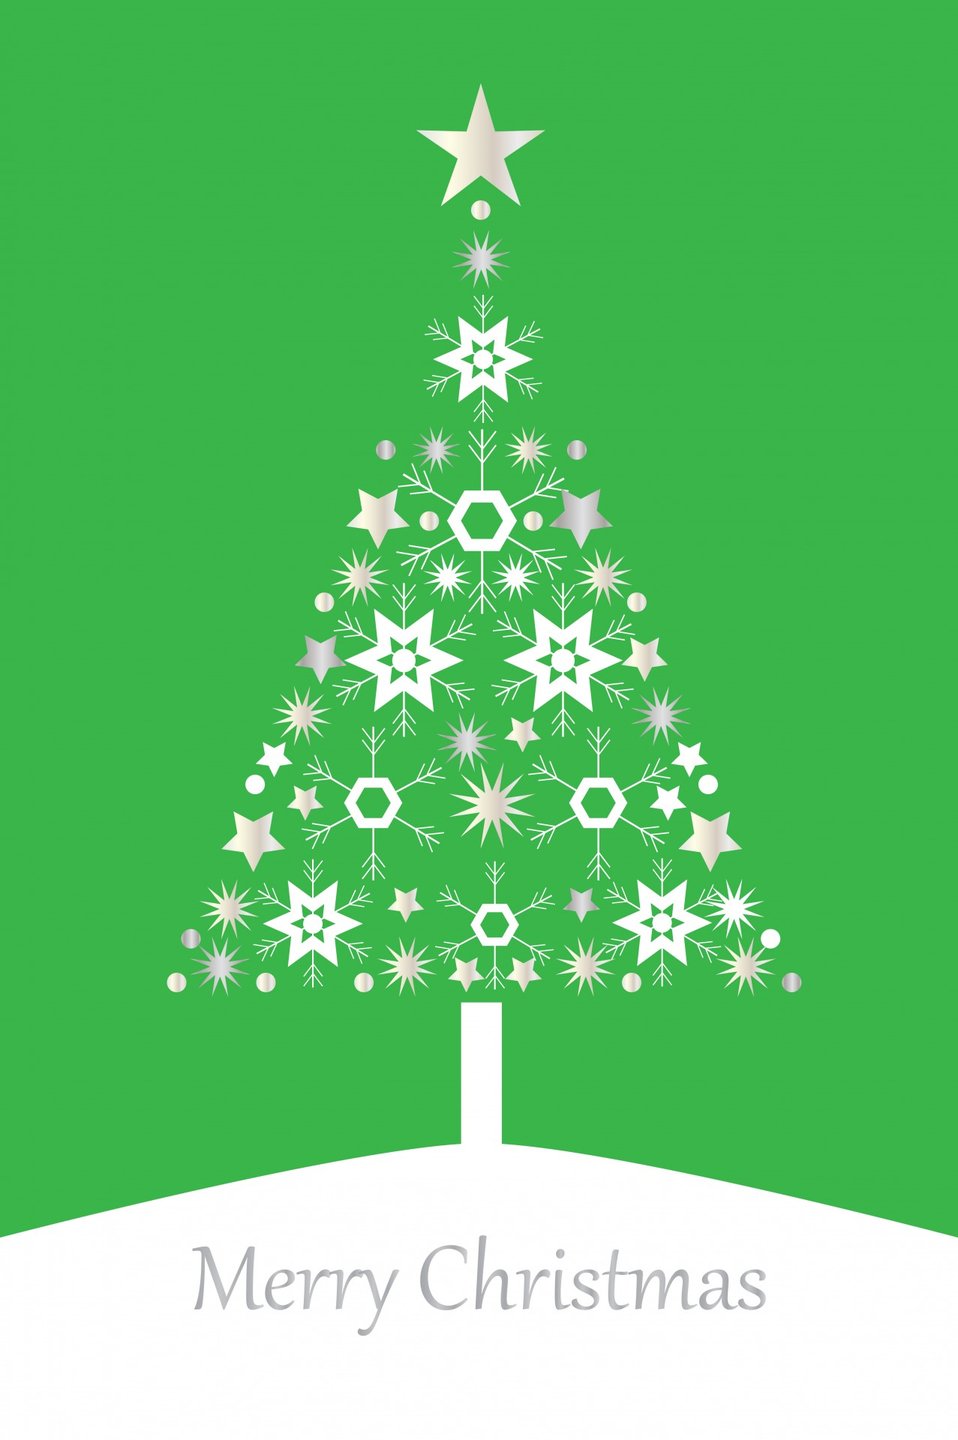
Christmas tree card modern

Modern green and silver christmas card template.